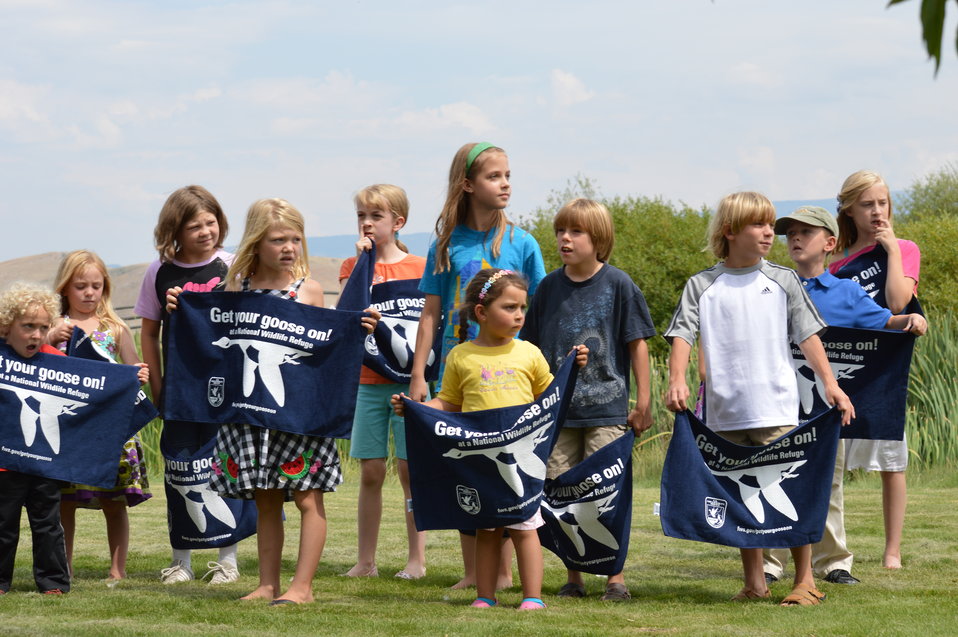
Get Your Goose On! - National Elk Refuge Style

On August 10, 2012 the U.S. Fish and Wildlife Service and Partners celebrated the 100 year anniversary of the establishment of the National Elk Refuge. In these photos, young attendees, along with Puddles the Blue Goose and the National Elk Refuge's mascot, showed us how to Get Your Goose On! with style.